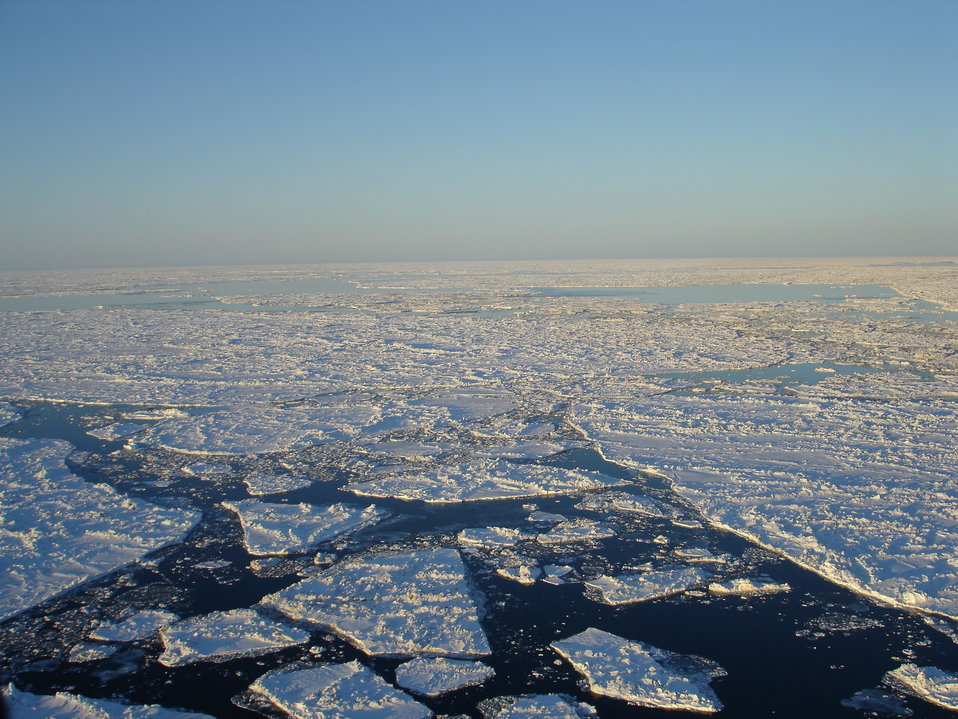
Rough Sea Ice At Sunset

Sea ice in broken sheets. Sea ice loses its salt content during the freezing process.